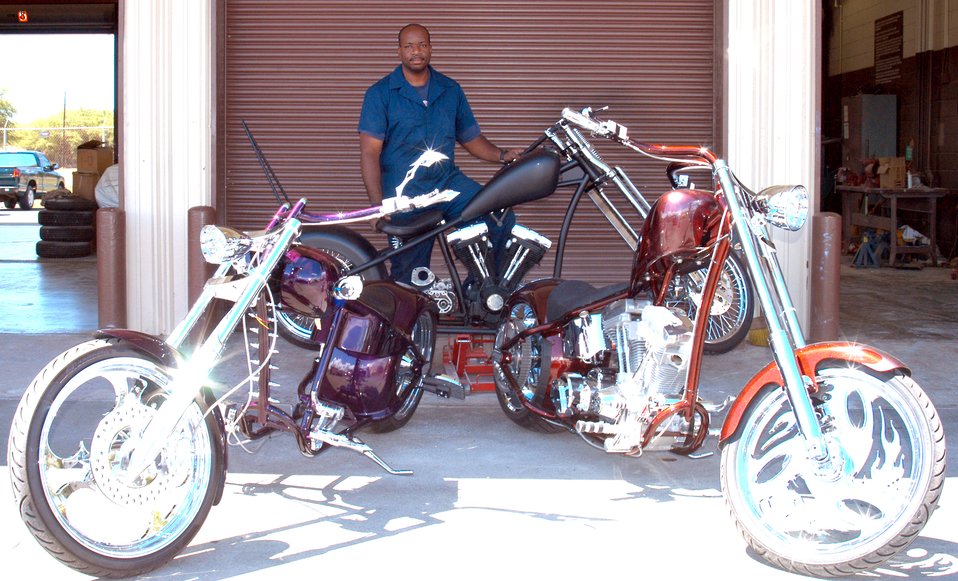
Sergeant's love of steel, paint creates rolling artwork

HICKAM AIR FORCE BASE, Hawaii -- Tech. Sgt. Greg Price stands with three bikes he has made. They are among 14 he has built in the past four years. He is a C-40B aircraft crew chief with the 15th Airlift Maintenance Squadron here.